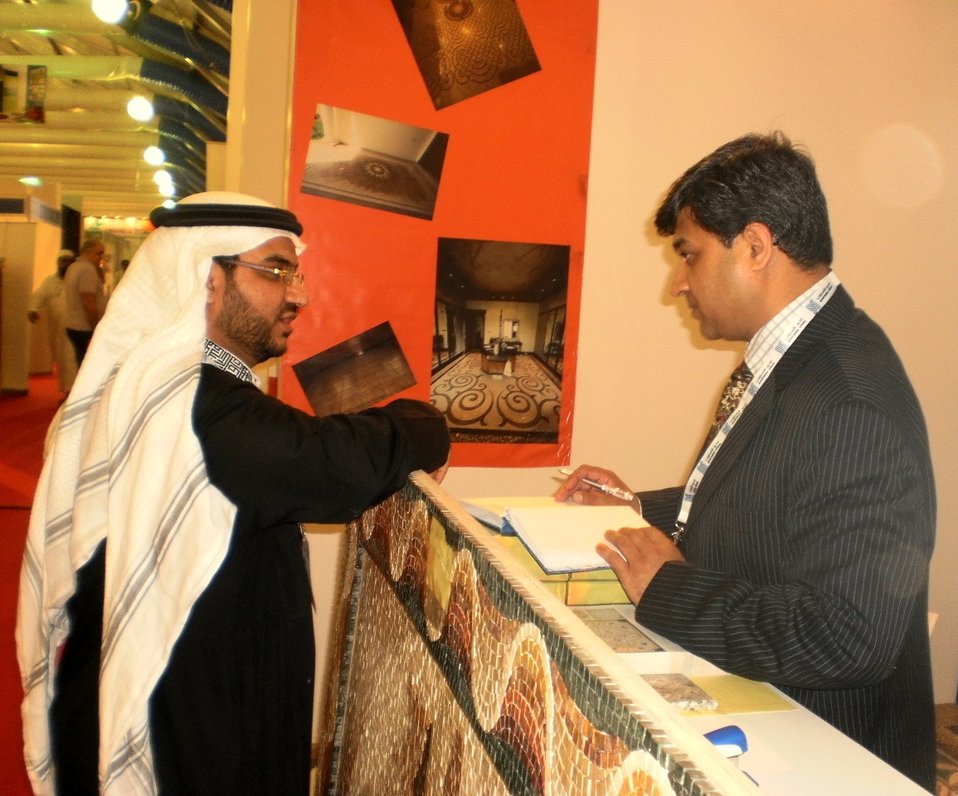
USAID Firms Project Marble and Granite sector participates in the BIG 5, largest construction show of Saudi Arabia

With USD 195 billion worth of construction being planned in Saudi Arabia in the coming three years, the exhibition provided a platform for the marble exporters, to access new markets and develop linkages with upcoming potential projects and clients